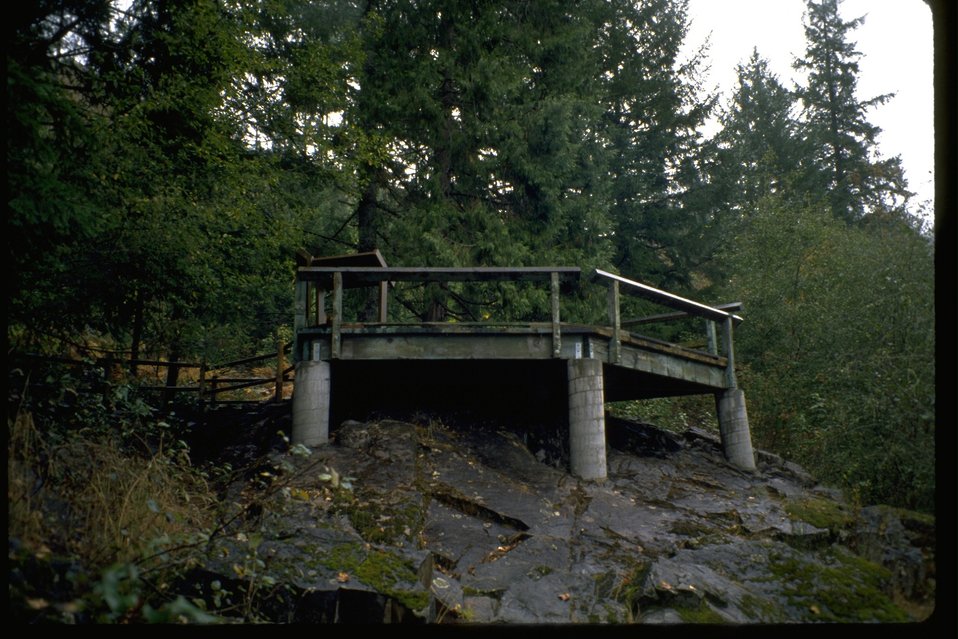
Viewing platform along the McKensie River.